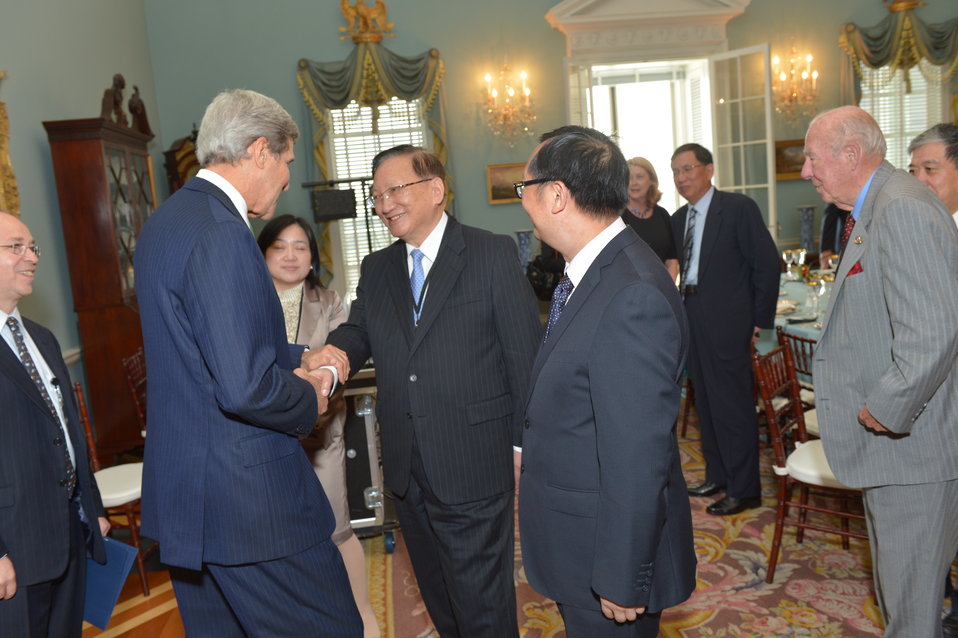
Secretary Kerry Shakes Hands With Former Chinese State Councilor Tang Jiaxuan

U.S. Secretary of State John shakes hands with former Chinese State Councilor Tang Jiaxuan during a lunch he hosts for the U.S.-China Track II Dialogue delegations at the U.S. Department of State in Washington, D.C., on October 15, 2013.